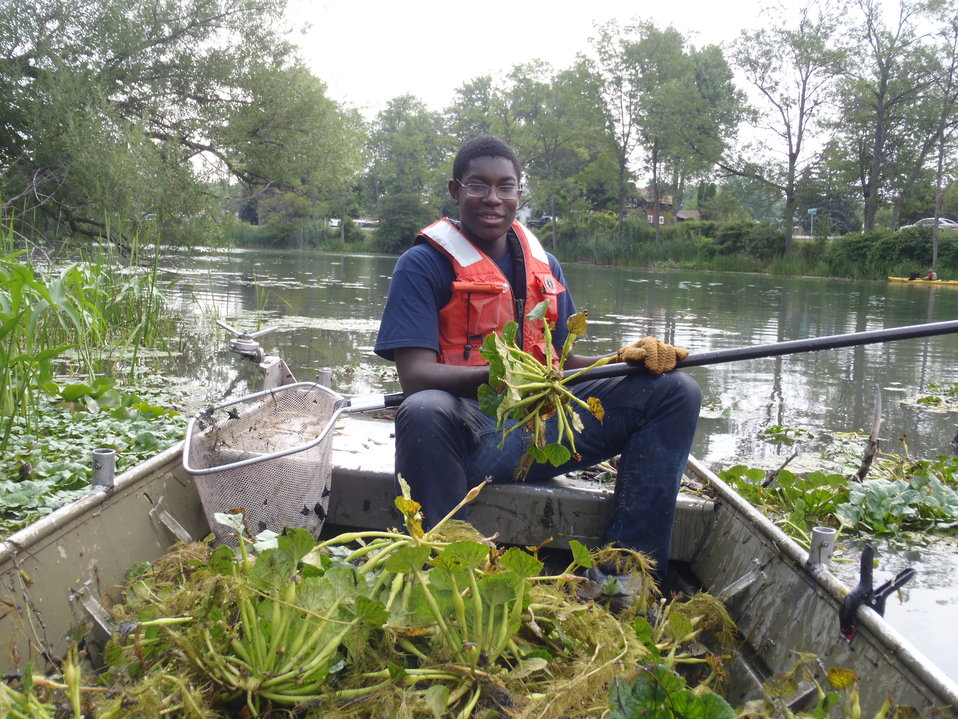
Water Chestnut Volunteer

Lower Great Lakes FWCO volunteer, Kwamina Otseidu, holding one of many water chestnut rosettes pulled in 2011.